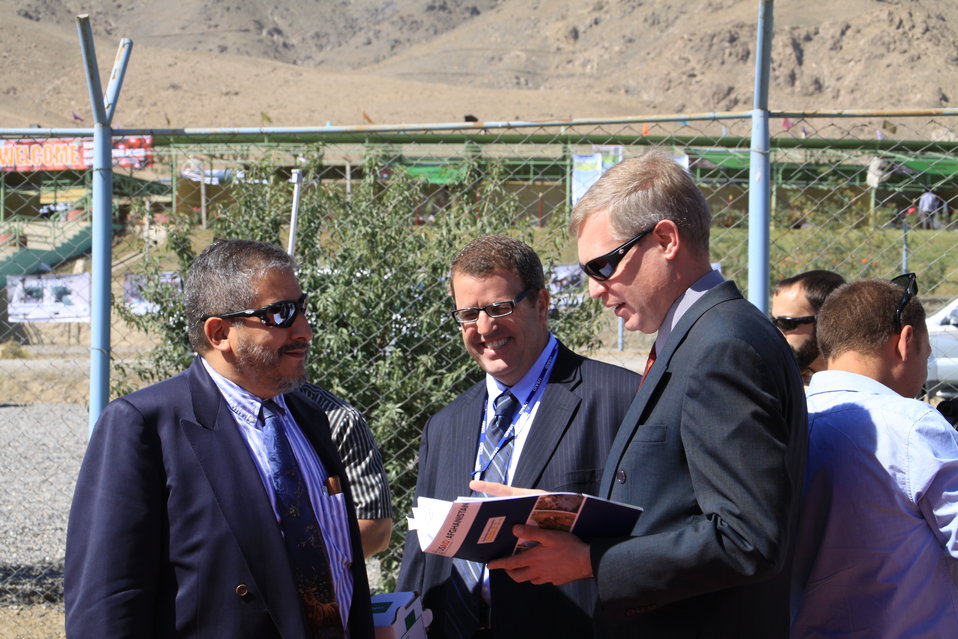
AVIPA Plus Wheat Seed Distribution 101005

US Ambassador Karl Eikenberry and USAID Acting Mission Director Kevin Brownawell joined the Minister of Agriculture, Irrigation and Livestock, H.E. Minister Mohammed Rahimi in signing a Memorandum of Understanding and distributing vouchers to area farmers for wheat and fertilizer.

US Ambassador Karl Eikenberry and USAID Acting Mission Director Kevin Brownawell joined the Minister of Agriculture, Irrigation and Livestock, H.E. Minister Mohammed Rahimi in signing a Memorandum of Understanding and distributing vouchers to area farmers for wheat and fertilizer.

US Ambassador Karl Eikenberry and USAID Acting Mission Director Kevin Brownawell joined the Minister of Agriculture, Irrigation and Livestock, H.E. Minister Mohammed Rahimi in signing a Memorandum of Understanding and distributing vouchers to area farmers for wheat and fertilizer.